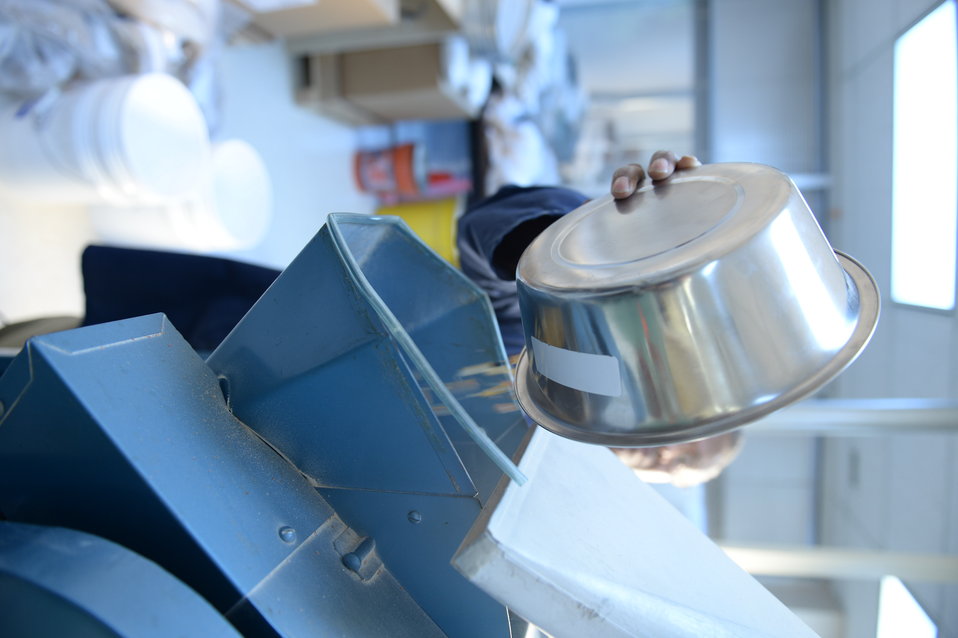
A U.S. Department of Agriculture (USDA) Grain Inspection, Packers and Stockyards Administration (GIPSA) Federal Grain Inspection Service (FGIS) scientist tests corn at the FGIS inspection laboratory in New Orleans, LA on Monday, Nov. 18, 2013.